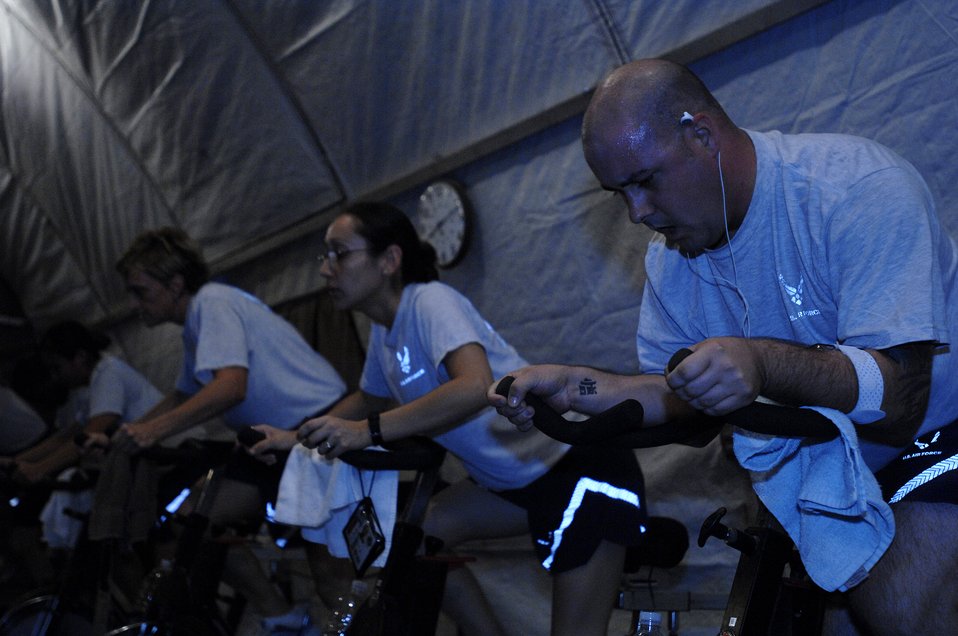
Fitness center helps Airmen lighten up for New Year, beyond

Staff Sgt. Dave Hart (far right) participates in a group-led spin class session Oct. 1 at the fitness center at Ali Base, Iraq. Sergeant Hart lost 31 pounds in three months to win the